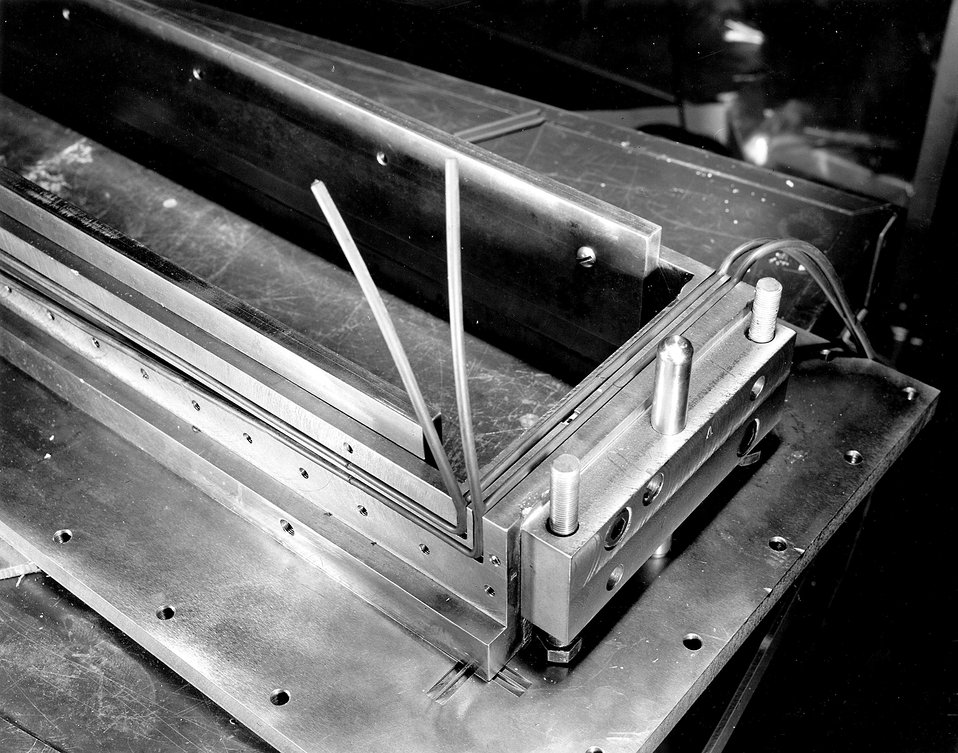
End box of main vacuum chamber showing details of three
dimensional double Myvaseal gaskets.